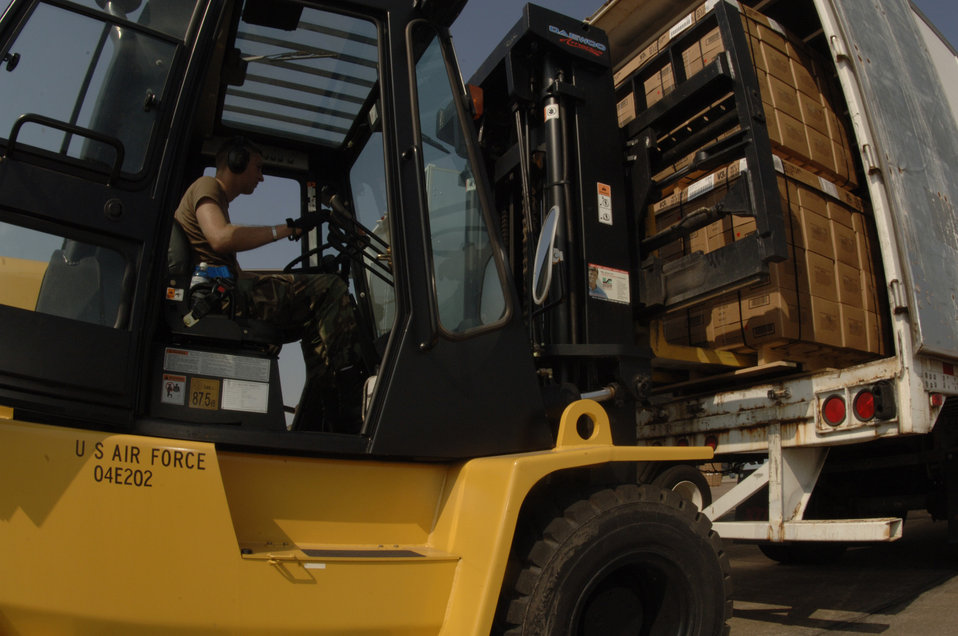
Meals Ready to Eat

ELLINGTON FIELD, Texas - A service member loads relief supplies onto a truck for distribution in support of Hurricane Rita. Active duty, Guard and Reserve components of the Air Force, Army, and Coast Guard converged here to support the relief efforts.